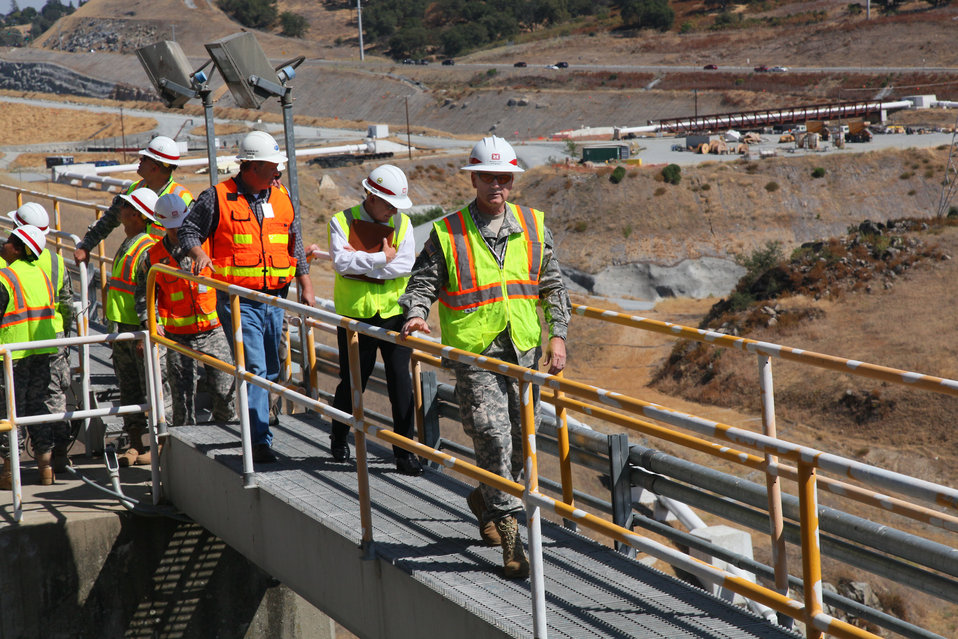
Maj. Gen. Michael Walsh tours Folsom Dam auxiliary spillway

Maj. Gen. Michael J. Walsh (center), Deputy Commanding General for Civil and Emergency Operations for the U. S. Army Corps of Engineers, tours the construction site for the new Folsom Dam auxiliary spillway in Folsom, Calif., July 18, 2012. The Sacramento District is building the spillway in cooperation with the U.S. Bureau of Reclamation, the Central Valley Flood Protection Board and the Sacramento Area Flood Control Agency to improve the safety of the existing dam and reduce flood risk for the greater Sacramento area. Walsh toured the project during a visit to Sacramento to learn more about the Corps’ projects in Northern California. (U.S. Army photo illustration by Michael J. Nevins/Released)